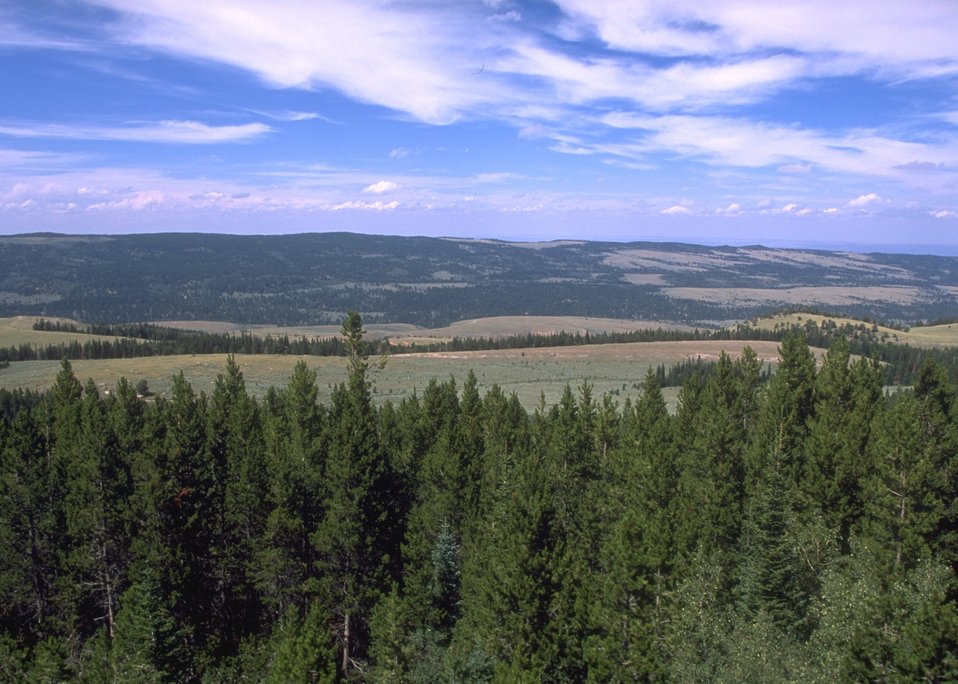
General view from overlook at Muddy Mountain Recreation Area, Casper Field Office.